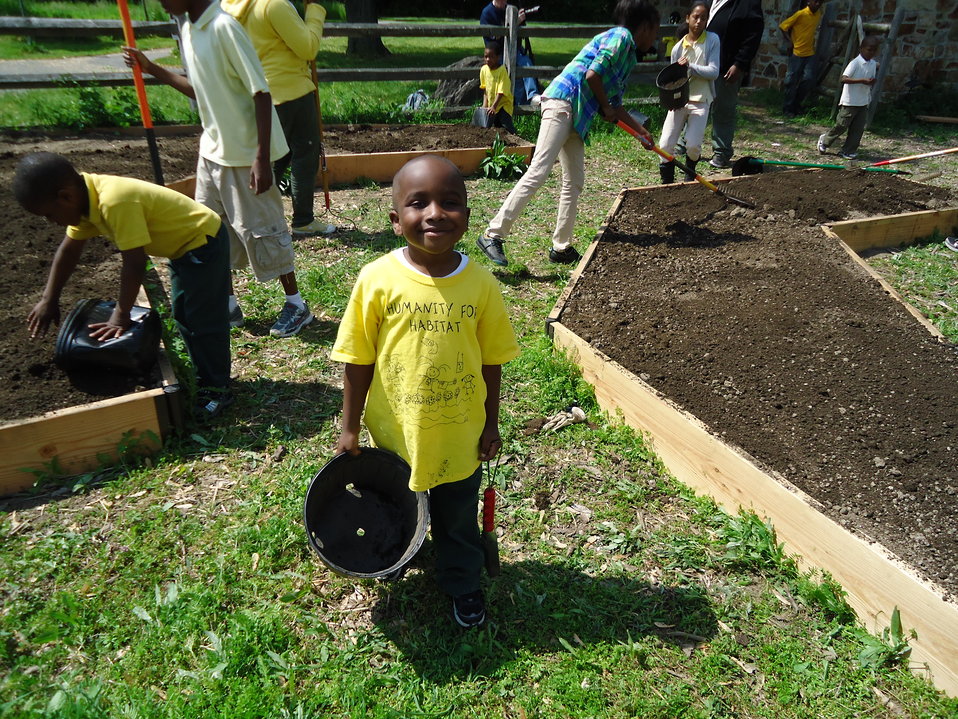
Pollinator garden (PA)

Children helping plant a pollinator garden at John Heinz NWR, Philadelphia, PA.